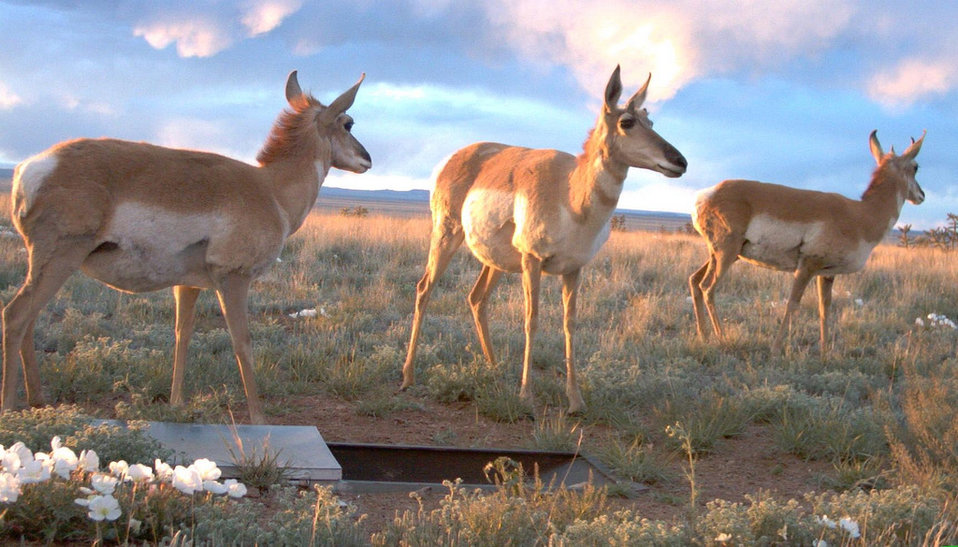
Antelope at Sevilleta National Wildlife Refuge

Antelope in a field at Sevilleta National Wildlife Refuge in New Mexico.